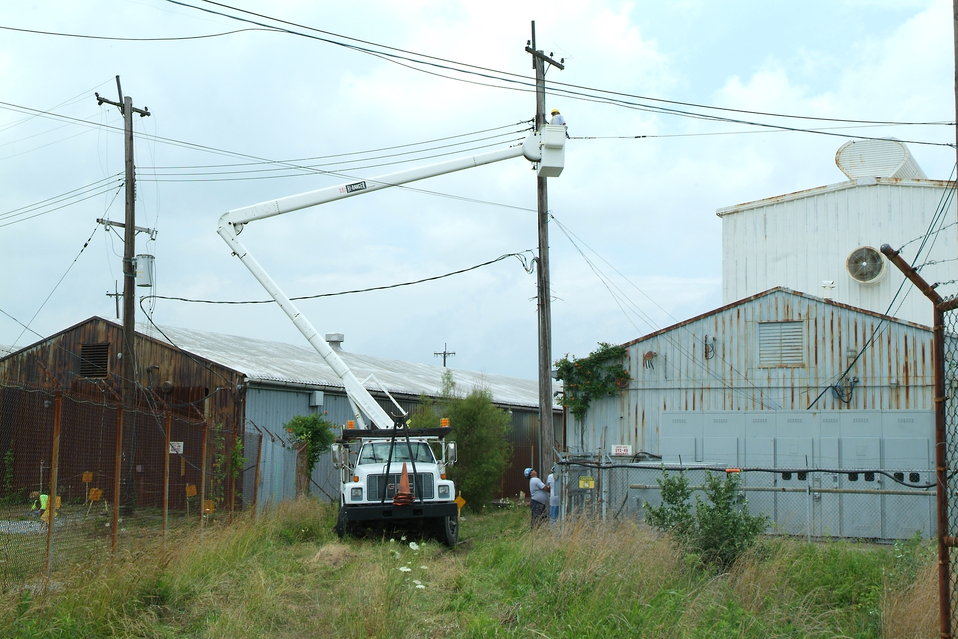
Utility Isolation

Smelter work which ended with September 2010 demolition.